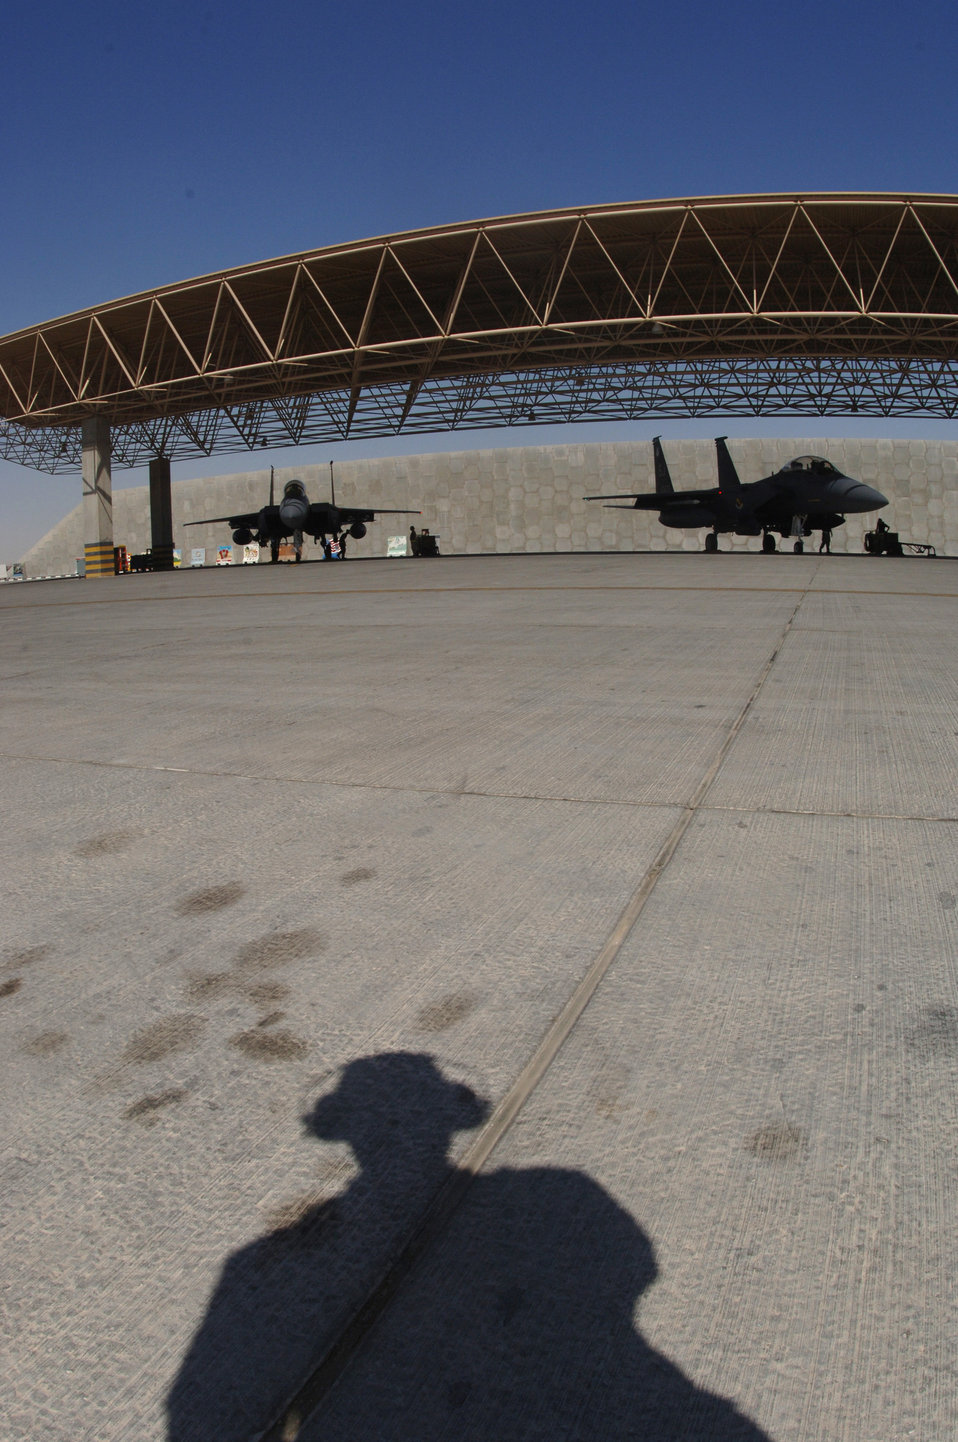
Strike Eagles ready to strike

A crewmember watches as two F-15E Strike Eagles from the 336th Expeditionary Fighter Squadron prepare for takeoff Wednesday, March 8, 2006, at a deployed location in Southwest Asia. The 336th is home-based at Seymour Johnson Air Force Base, N.C.